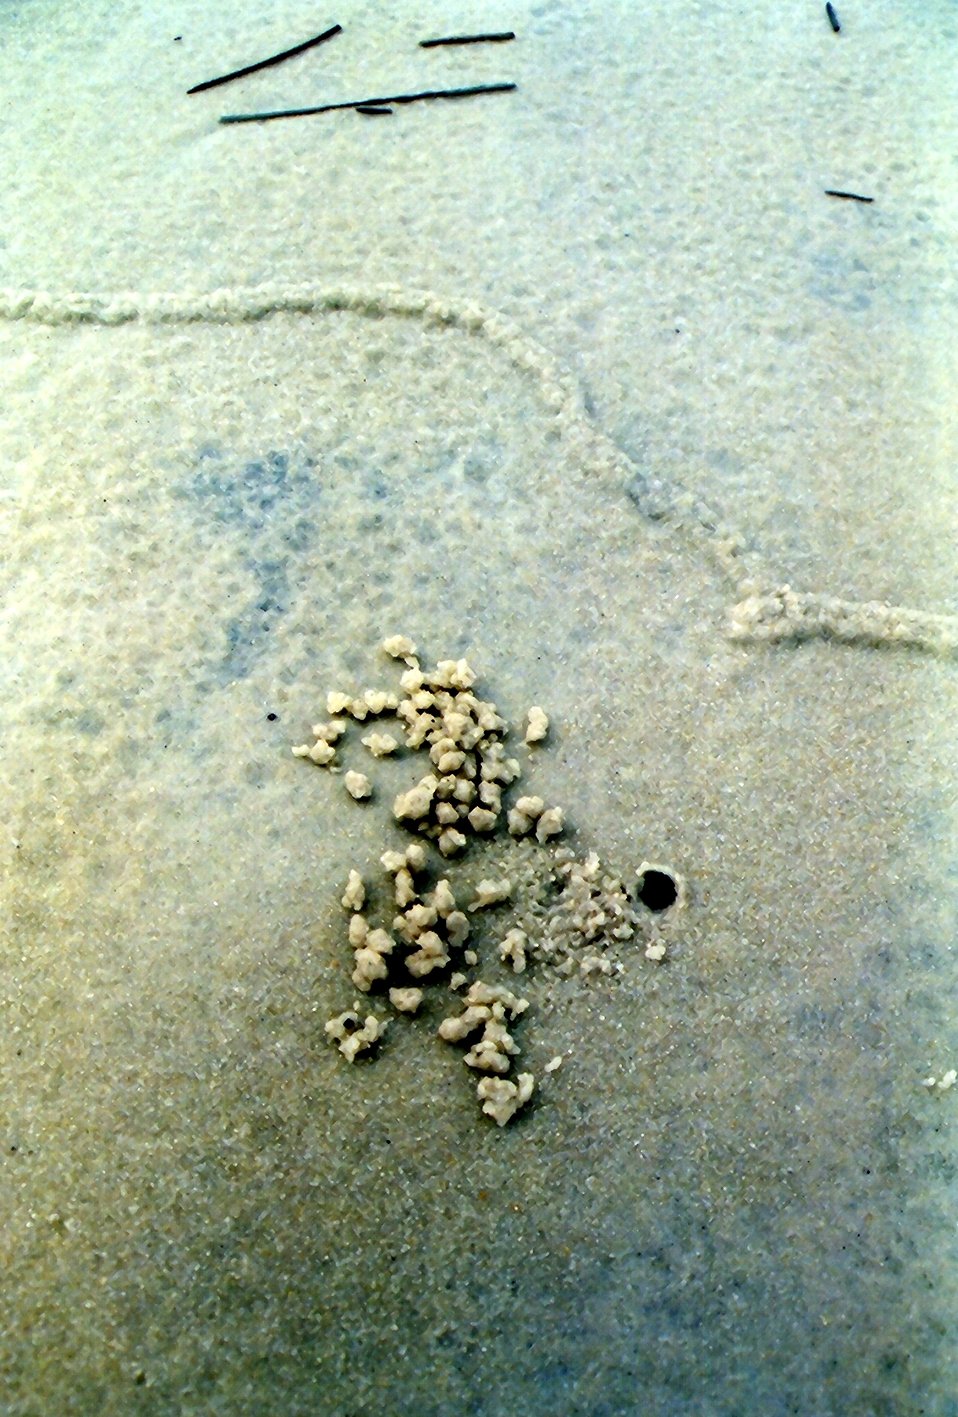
Pencil-sized tunnels caused by some type of burrowing animal caused a series of hieroglyphic appearing designs on the beach. Burrowing animal left evidence of its excavations on the beach sand.